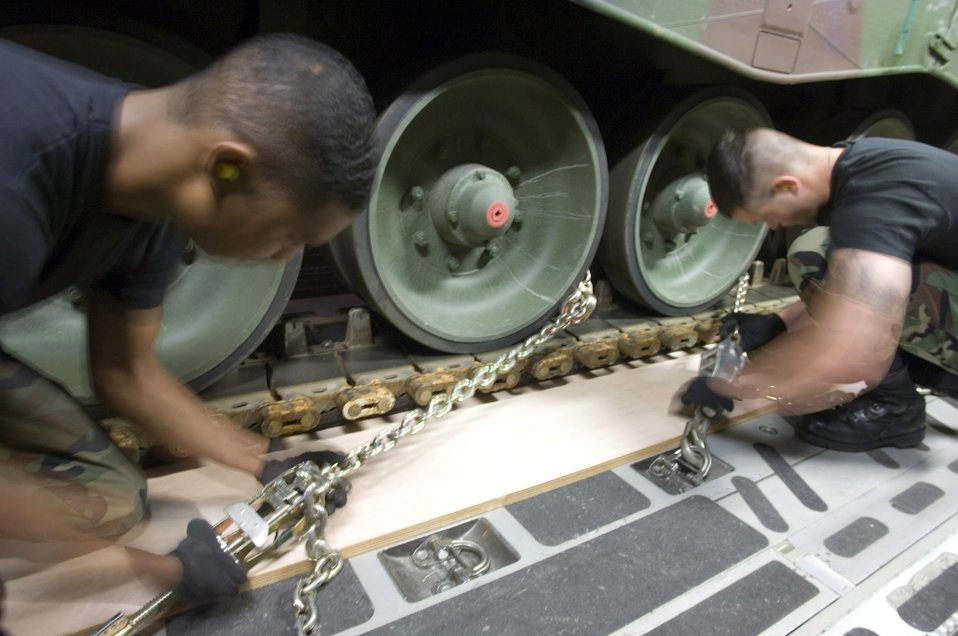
Howitzer takes flight

Airmen Jason Estell (left) and Andrey Benchea secure a Netherlander Howitzer 2000 on a C-17 Globemaster III at Ramstein Air Base, Germany, Sept. 6. The Airmen are air transportation specialists with Ramstein's 723rd Air Mobility Squadron working on the heavy air transport ensuring the 60-ton tank arrives safely in Afghanistan.